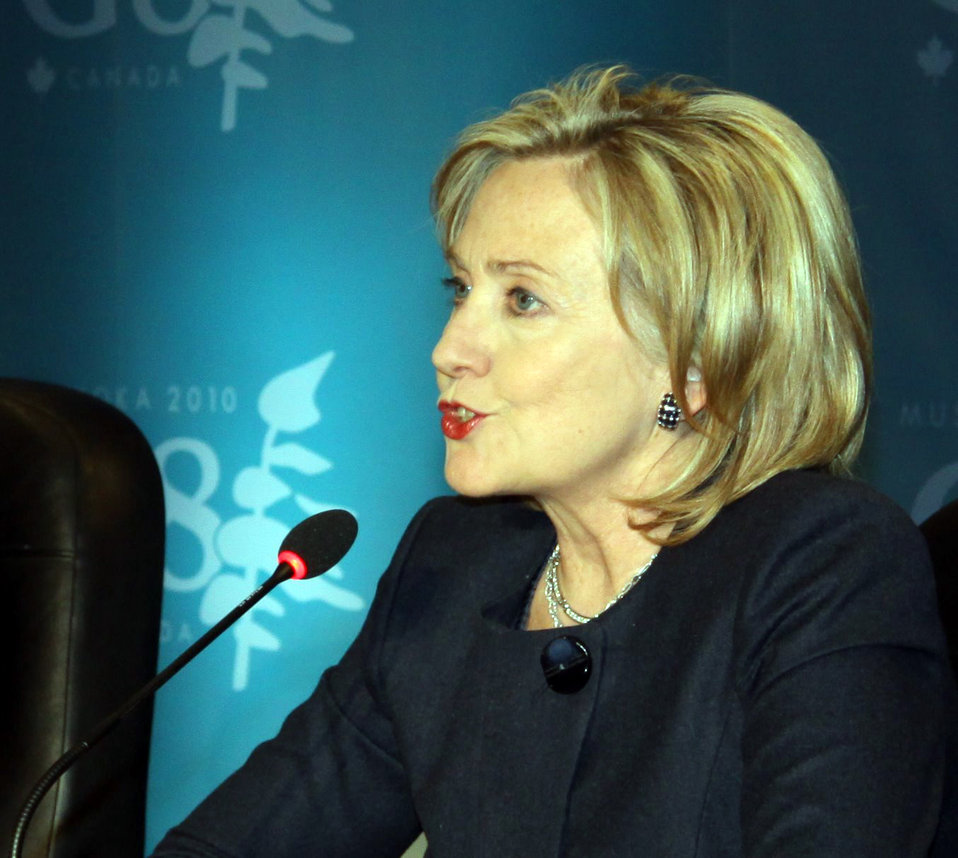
Secretary Clinton Participates in G8 Foreign Ministers Meeting Press Conference

U.S. Secretary of State Hillary Rodham Clinton participates in a press conference during the G8 Foreign Ministers Meeting in Ottawa, Canada March 29, 2010.